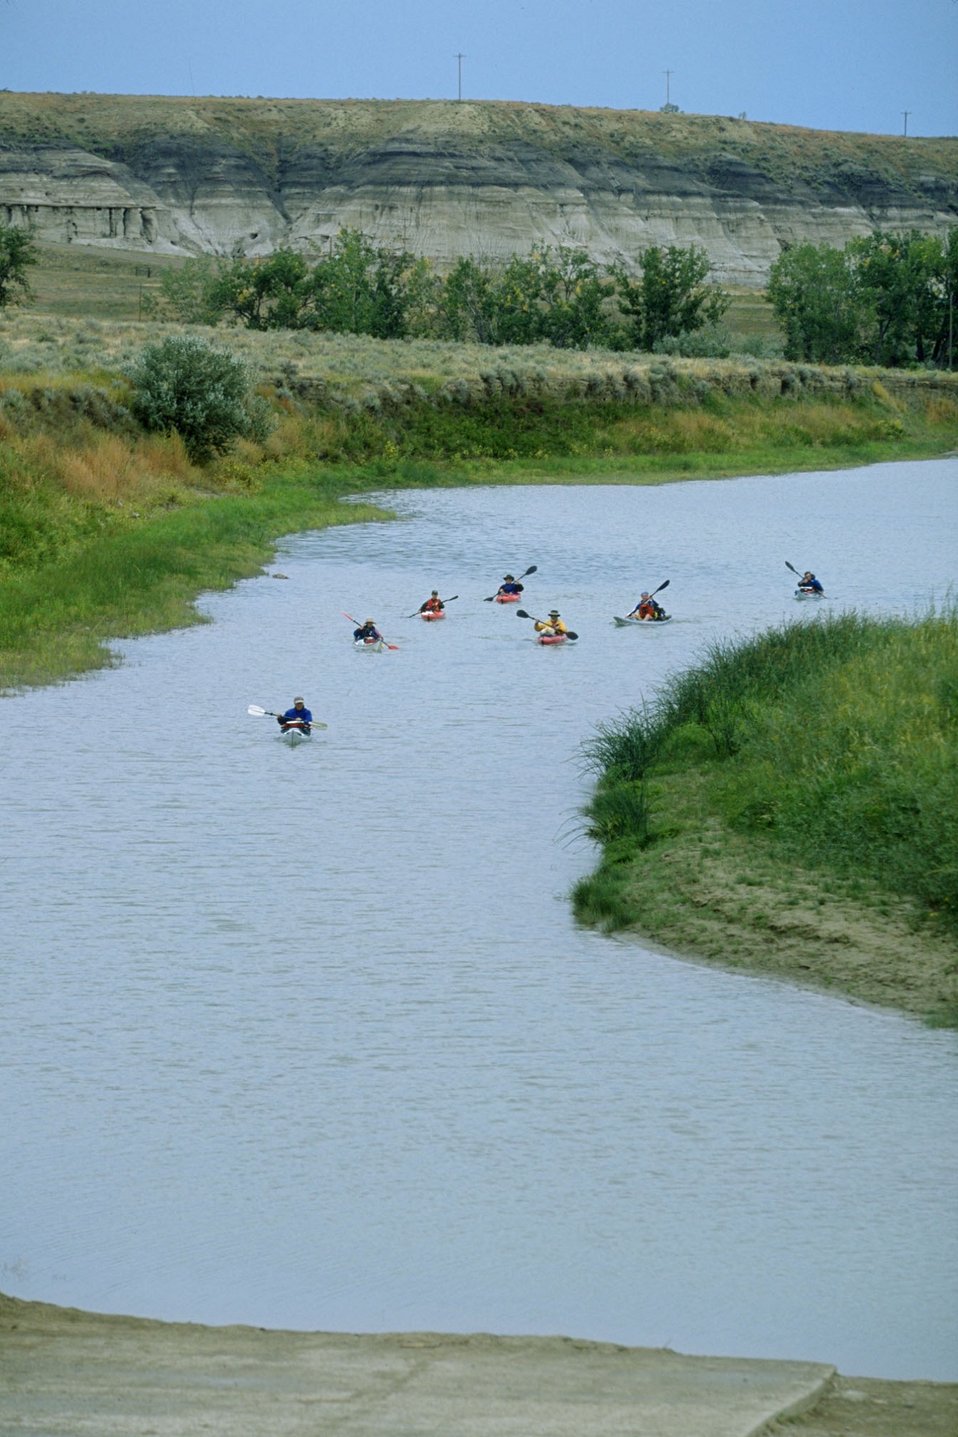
Floating the Upper Missouri River